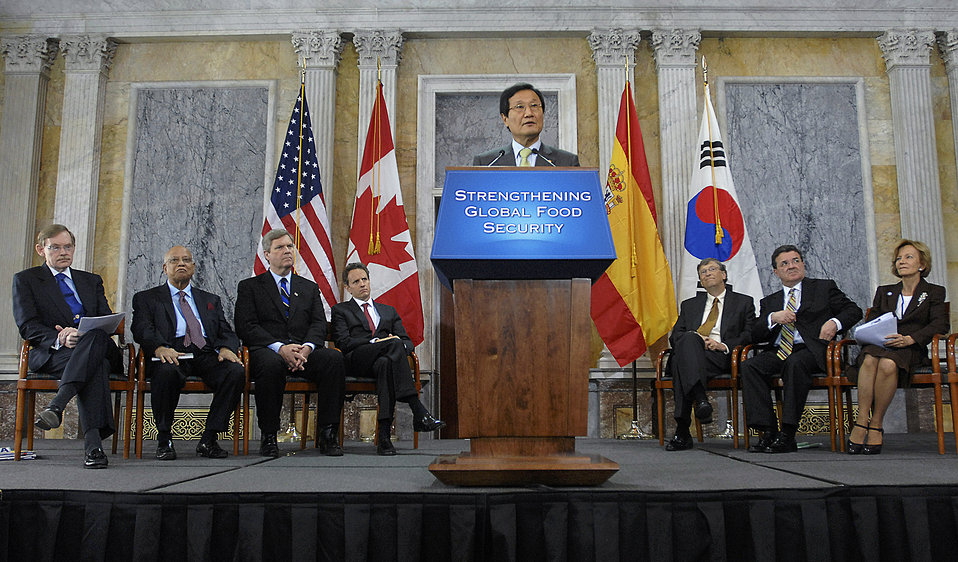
Announcement on International Commitment to Fight Global Hunger and Poverty, 4/22/2010

World Bank President Robert Zoellick, Finance Minister of Bangladesh Abul Maal Abdul Muhith, U.S. Secretary of Agriculture Tom Vilsack, Treasury Secretary Timothy Geithner, Co-chair of the Bill & Melinda Gates Foundation Bill Gates, Canadian Minister James Flaherty, and Spanish Second Vice President and Minister of Finance of Finance Elena Salgado listening to South Korean Finance Minister Yoon Jeung-Hyun speak on International Commitment to Fight Global Hunger and Poverty at the Treasury Department April 22, 2010.